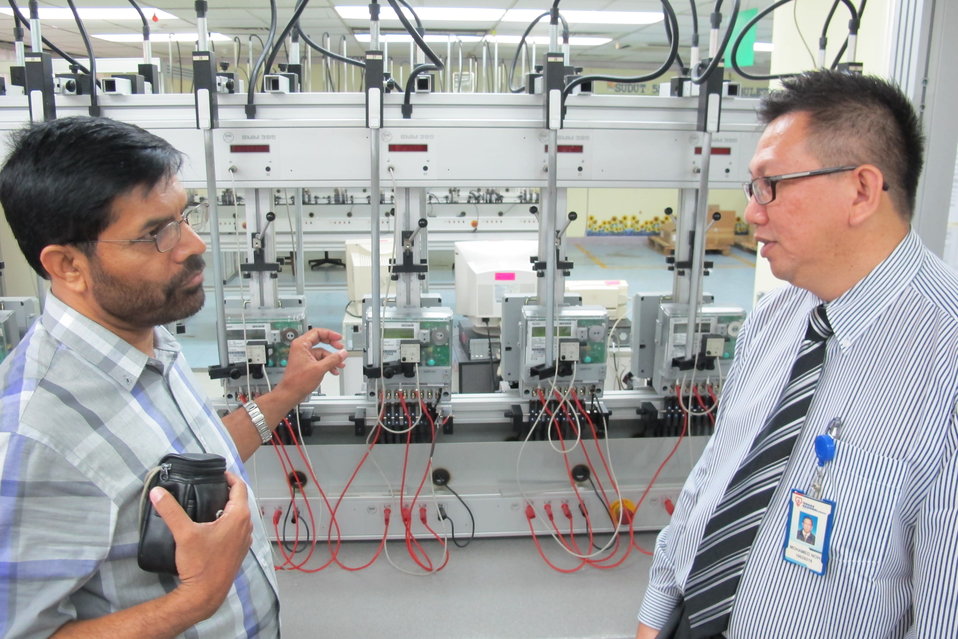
USAID provides practical on-site training in utility engineering and design processes in Malaysia

The Power Distribution Program successfully conducted an UEP in Malaysia to give participants hands-on knowledge on best practices in distribution utility engineering, design and planning processes. Through its series of exchange programs, the USAID Power Distribution Program will enhance understandings of work cultures, best practices and change management programs that are commercially proven and can be implemented in Pakistan’s DISCOs.

“These utility exchange programs (UEPs) are hugely beneficial for the employees of Government-owned power distribution companies (DISCOs), as they allow them to interact with their counterparts in international, best practices utilities, bringing back key information and experience.”
Power Distribution Program HR & Change Management Director
Tahir Ali Khan